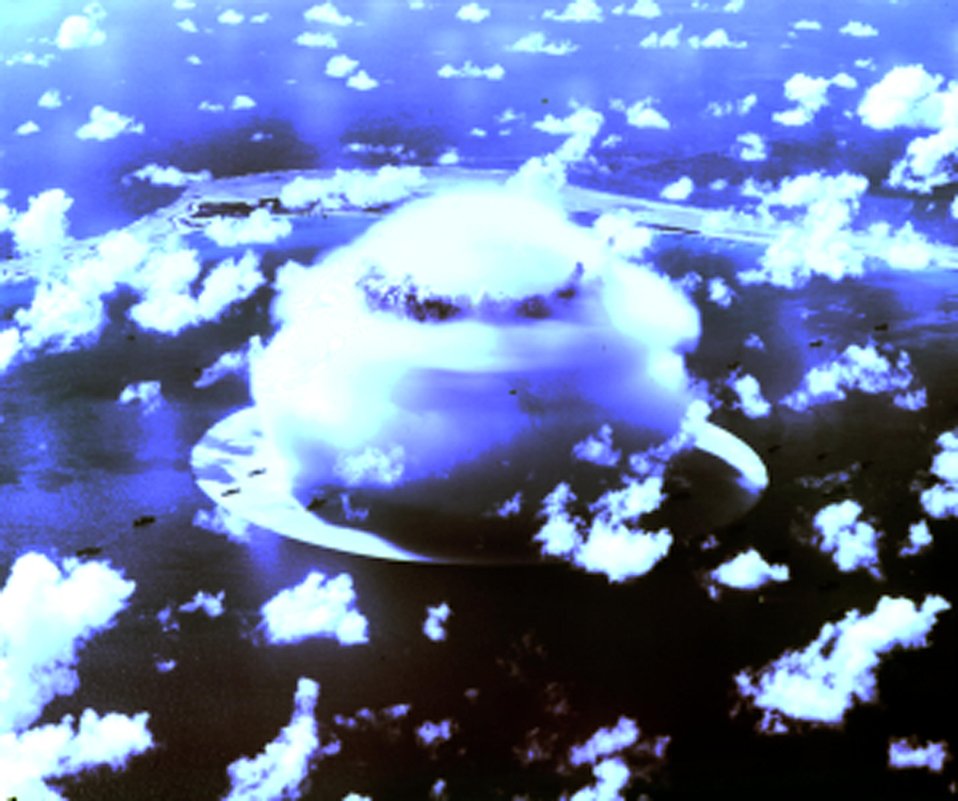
Baker Day at Bikini Atoll, 25 July 1946.